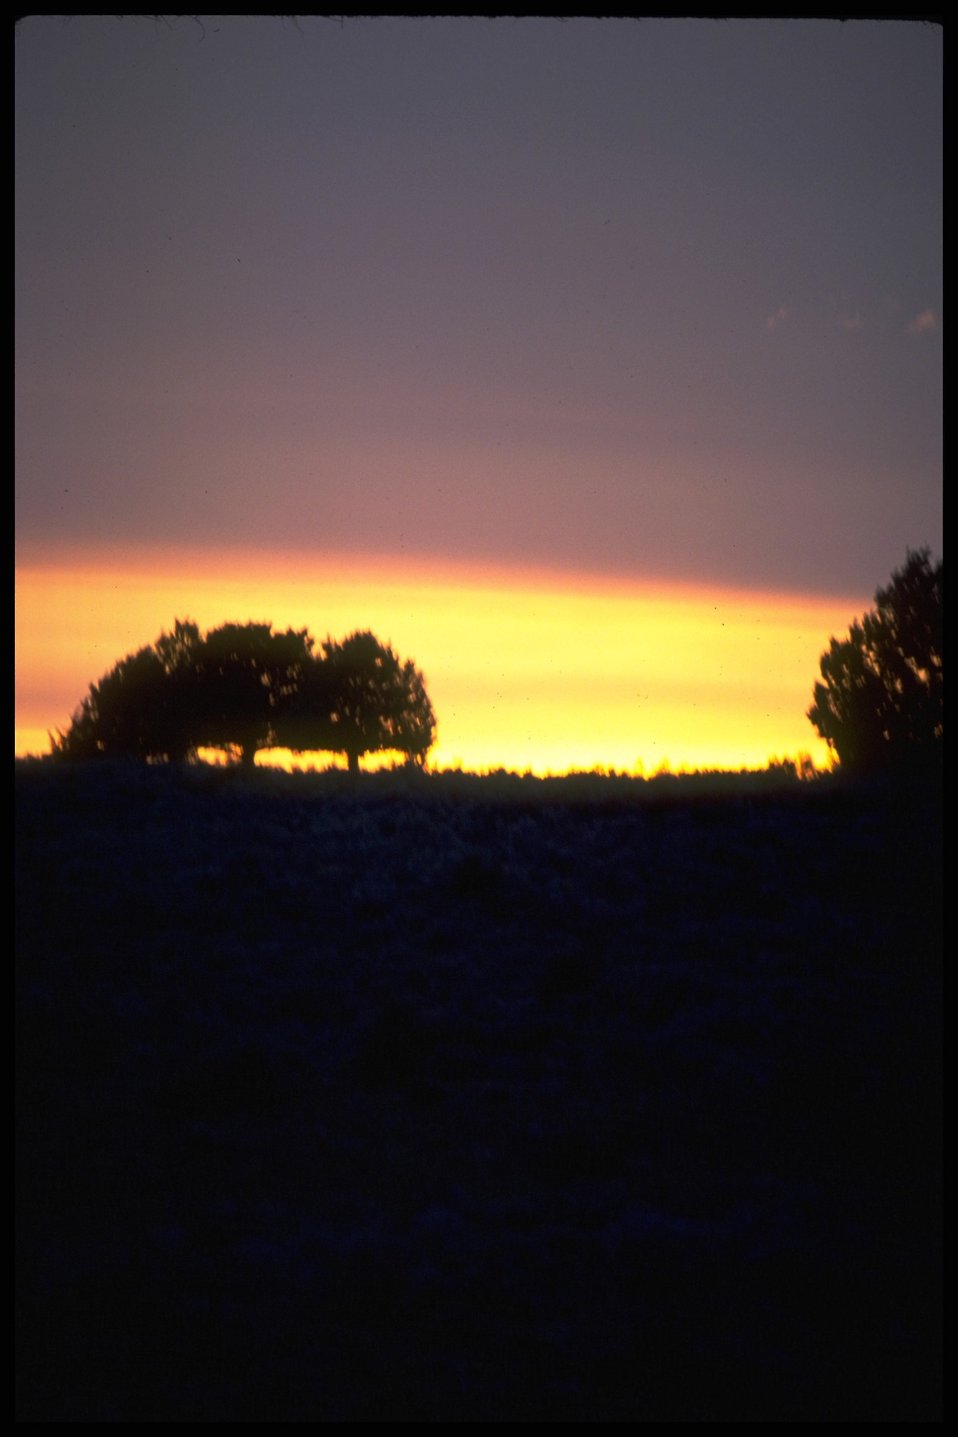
Lakeview District sunset.